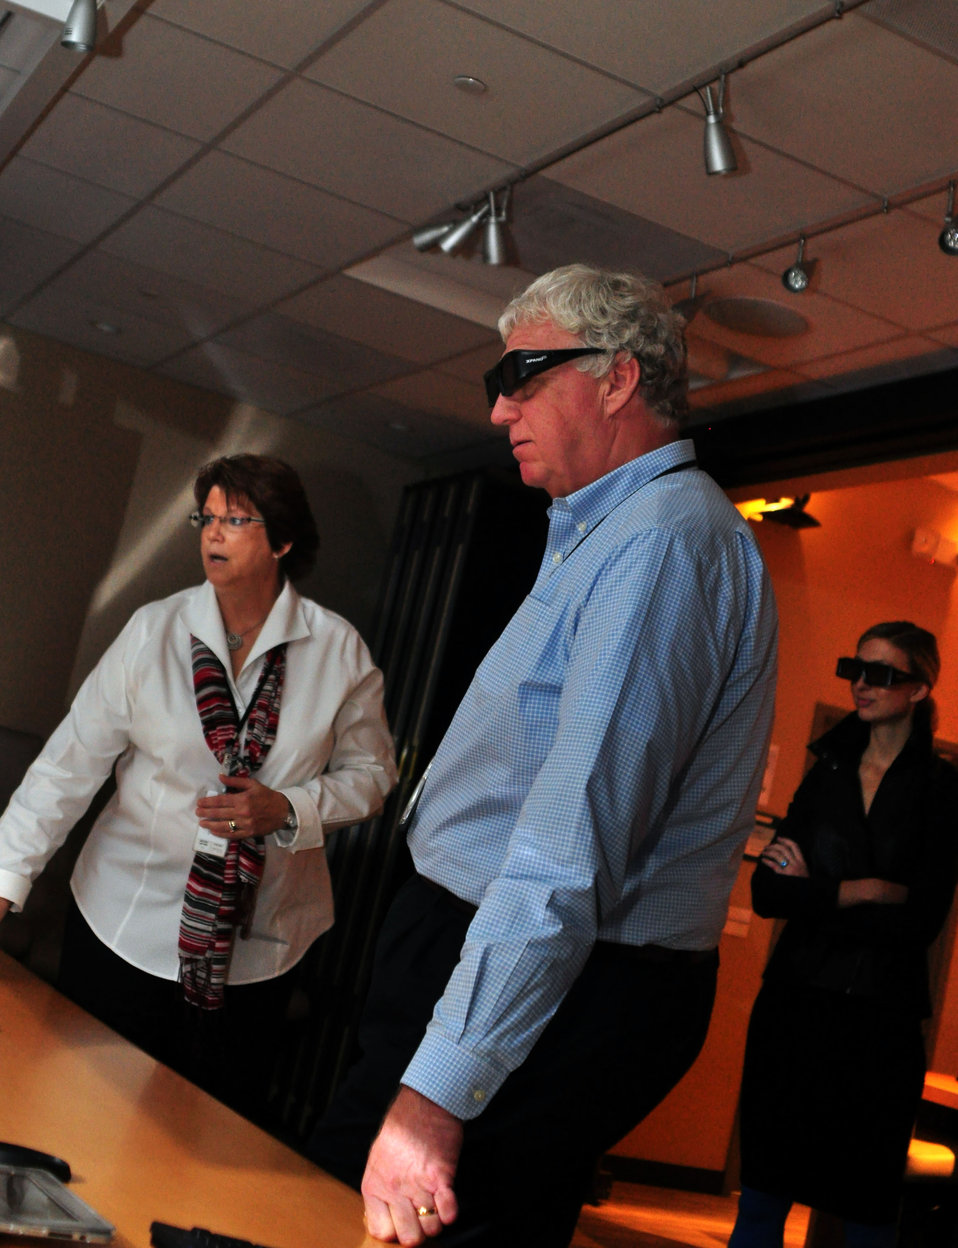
Richard Serino Deputy Administrator, FEMA Visit to Oak Ridge 2013

13-116-134 DOE photo Lynn Freeny 9-26-2013 Oak Ridge Tennessee